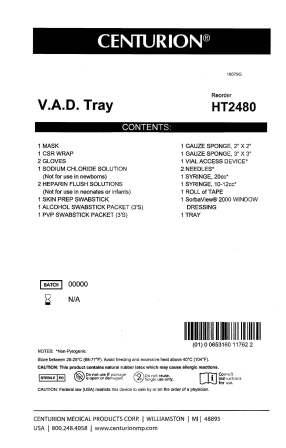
RECALLED - Convenience kits which contain bacteriostatic sodium chloride solution by American Regent

April 1, 2011 - Product Recall - Centurion Medical Products Initiates Voluntary Recall of Customized Convenience Kits (including select Central Venous Catheter, PICC Insertion, and VAD Trays) that contain American Regent’s Bacteriostatic Sodium Chloride Injection, USP, 0.9% 30 mL Multiple Dose Vials.